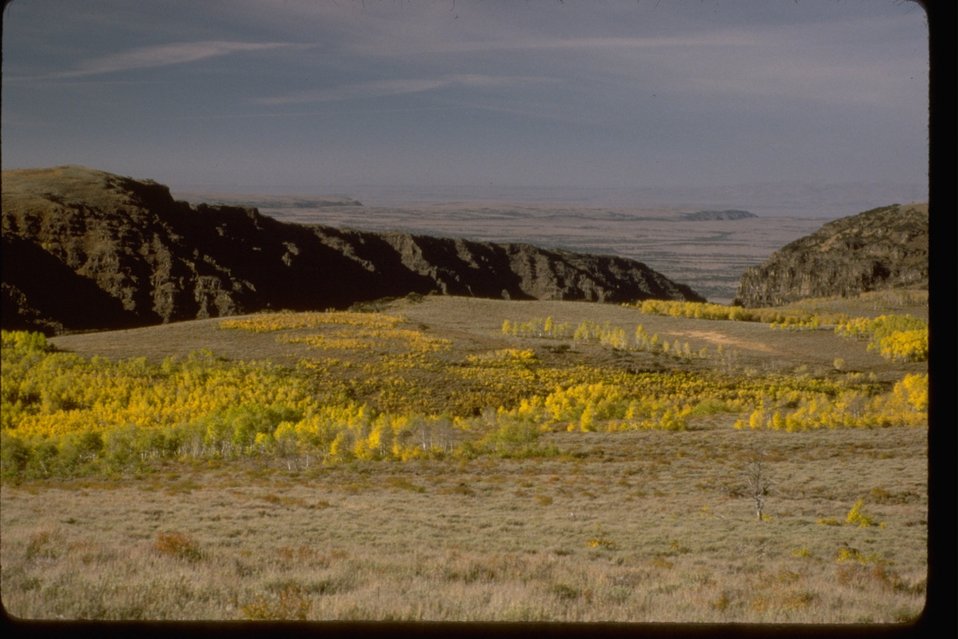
Fall colors on the Nye Property area with the Little Bliztzen Gorge in the background.